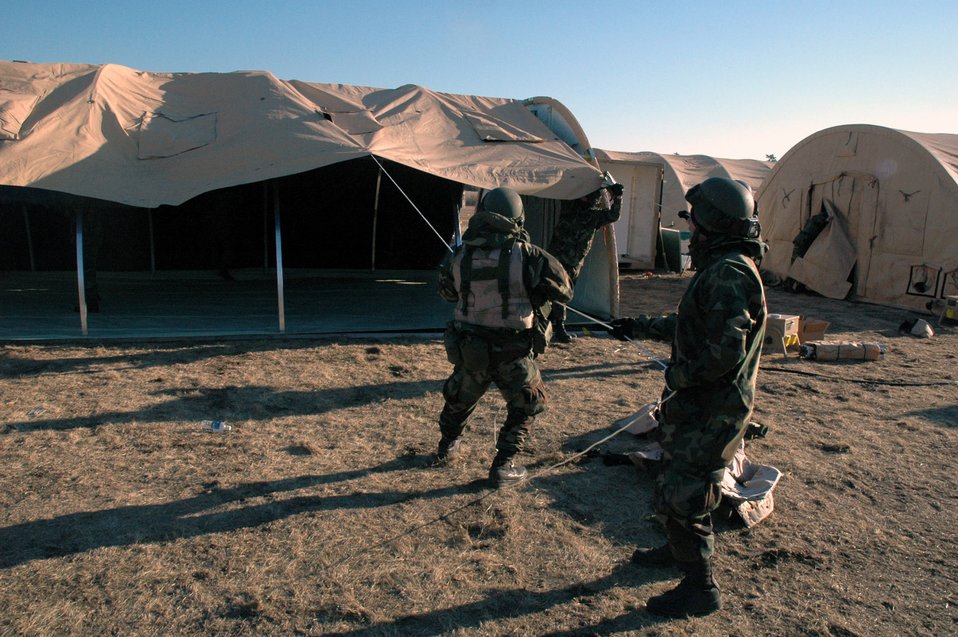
Eagle Flag

Airmen deployed with the 421st Air Expeditionary Group build an Alaskan tent during operations for Eagle Flag Feb. 11 at the Naval Air Engineering Station in Lakehurst, N.J. The exercise, operated by the Air Mobility Warfare Center's 421st Combat Training Squadron from Fort Dix, N.J., is set up to test Airmen on their expeditionary combat support skills.